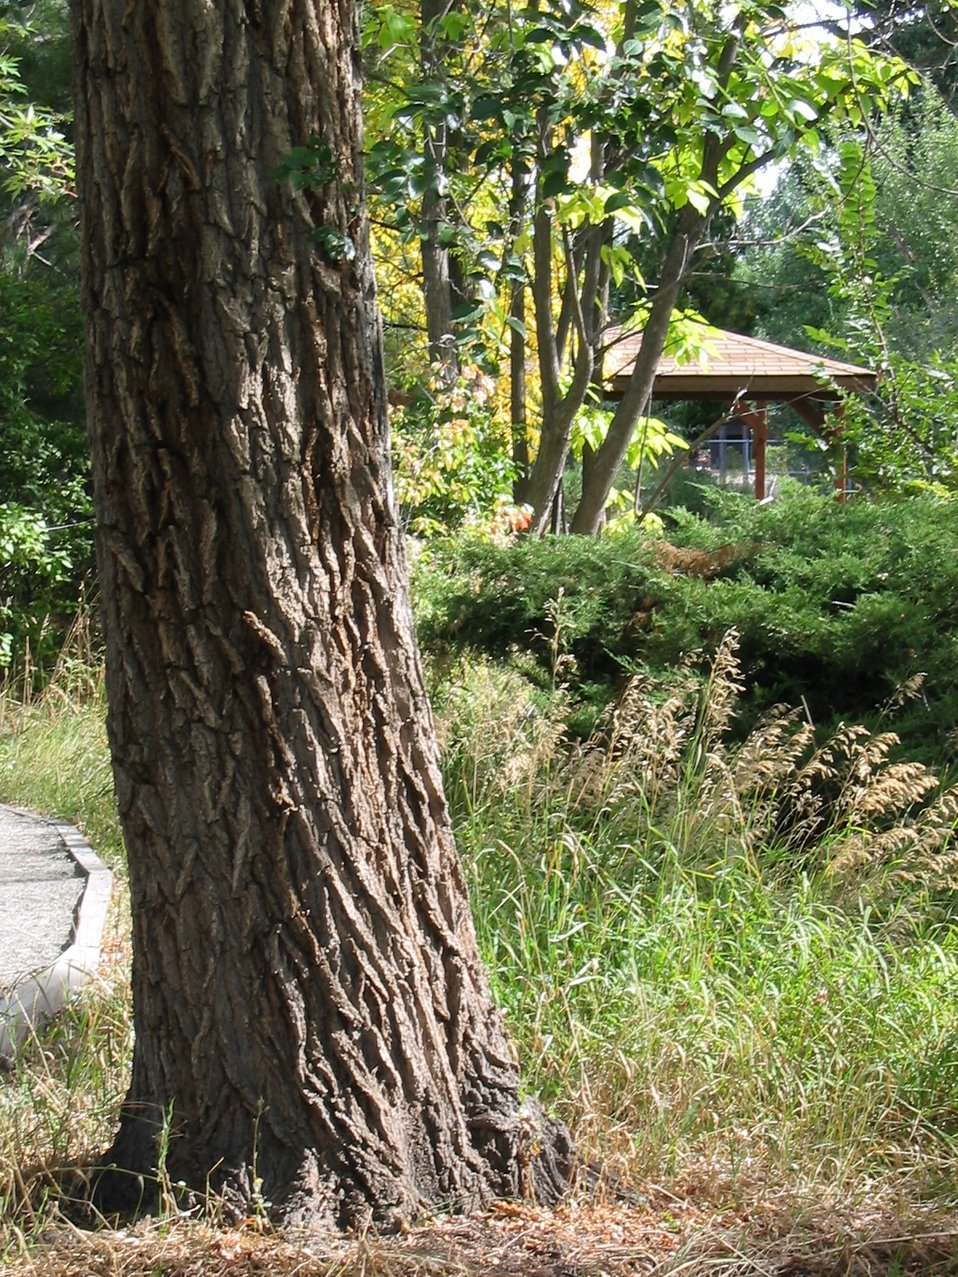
Tree View